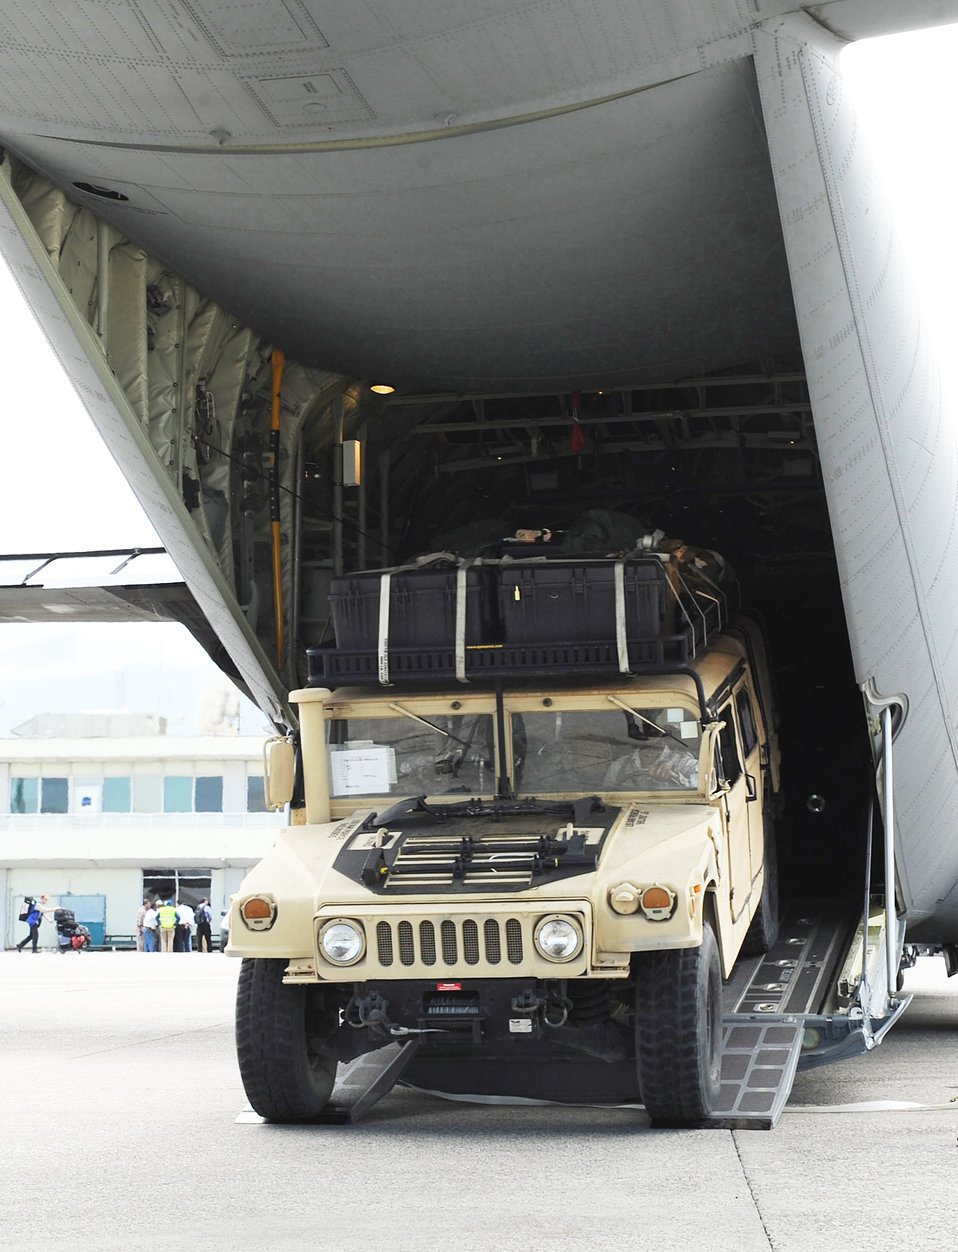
Little Rock AFB crew gets supplies on ground

A Humvee is rapidly deployed from a 41st Airlift Squadron C-130J Super Hercules during an engine running off-load at the Toussaint L'Ouverture International Airport in Port-au-Prince, Haiti, Jan. 14, 2010 as part of on-going Haitian earthquake relief operations.